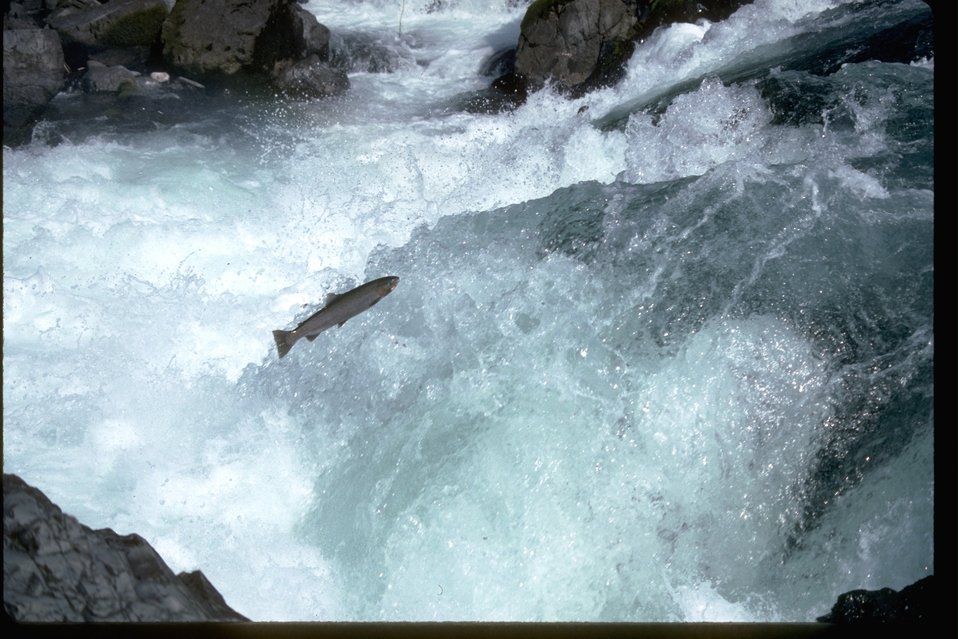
Salmon or Steelhead jumping up falls.